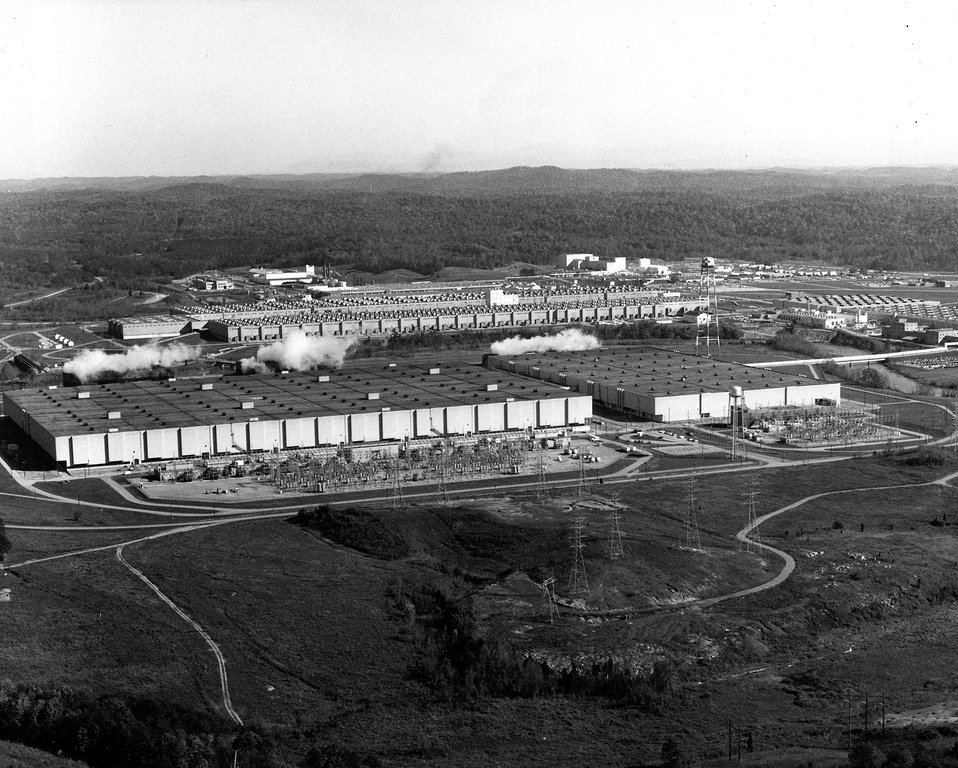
The Energy Research and Development Administration's Oak Ridge (Tenn.) Gaseous Diffusion Plant is the first such facility built in the world for production of enriched uranium. The original gaseous diffusion process building 'K-25,' which is the U-shaped building, was constructed in 1943 and began operating in 1945, producing enriched uranium for the Manhattan Project of World War II. Circa 1976.